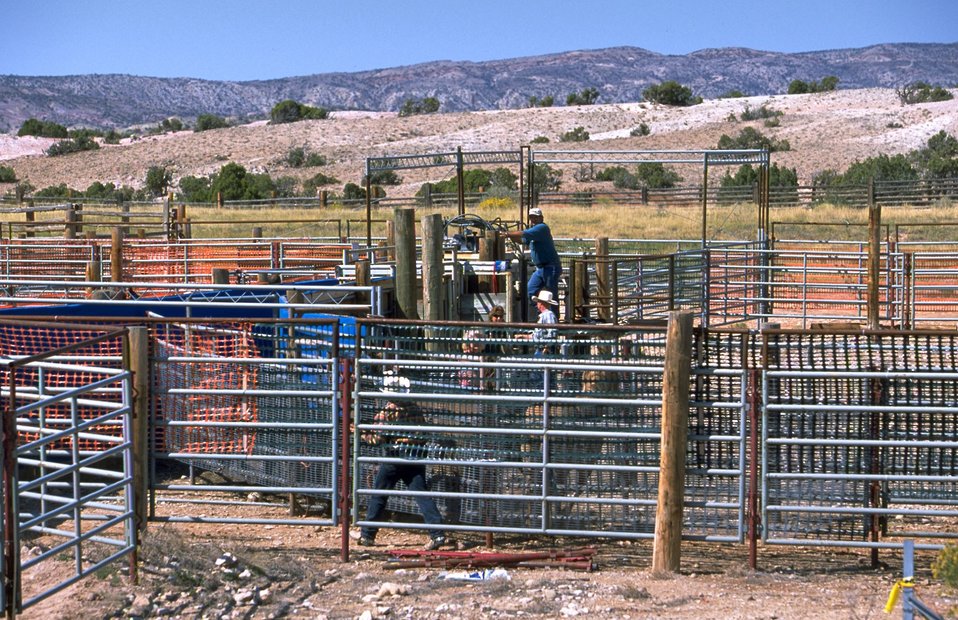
Cowboys working with wild horses in the Britton Spring holding area